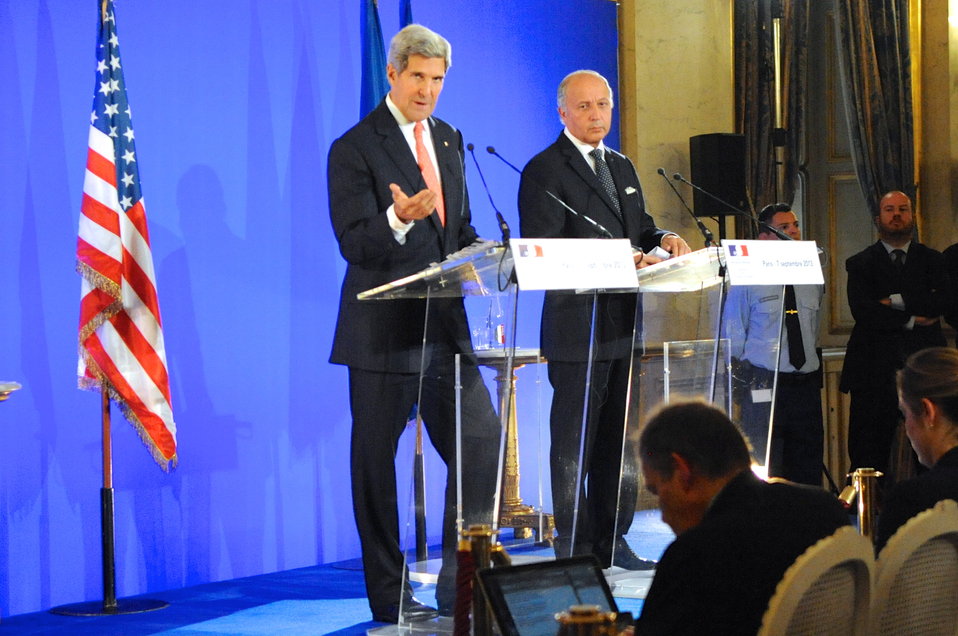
Secretary Kerry and French Foreign Minister Fabius Hold a News Conference

U.S. Secretary of State John Kerry and French Foreign Minister Laurent Fabius discuss Syria during a news conference at the French Ministry of Foreign Affairs in Paris, France on September 7, 2013.